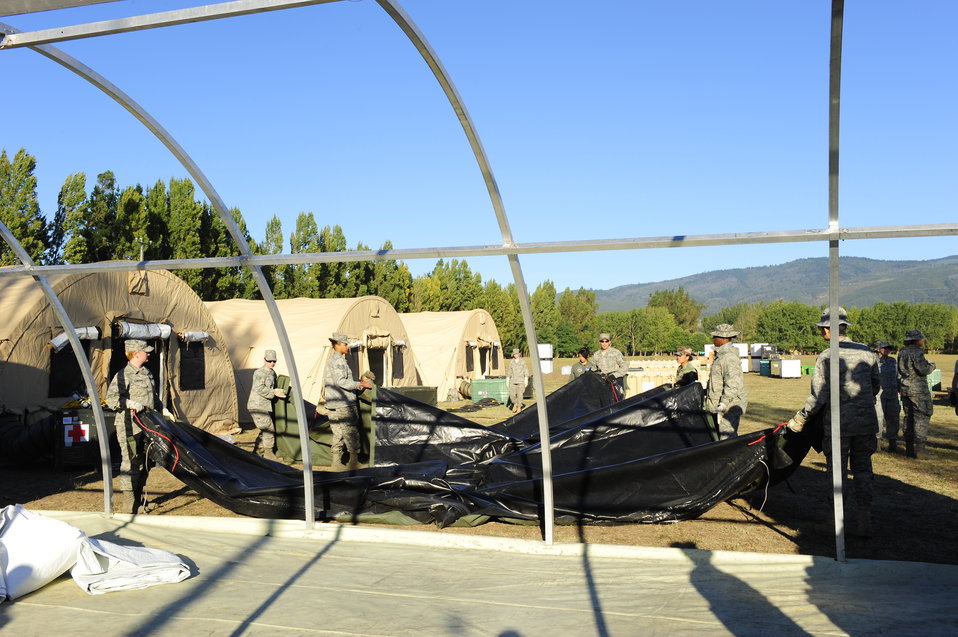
Airmen expand local hospital to meet Chileans’ medical needs

Airmen from an Air Force Expeditionary Medical Support team along with members of the Chilean army prepare a tarp that will be used as a roof for a mobile hospital March 12, in Angol, Chile. The EMEDS team is adding an additional operating room and three patient wards to the facility at the request of local Chilean medical officials.